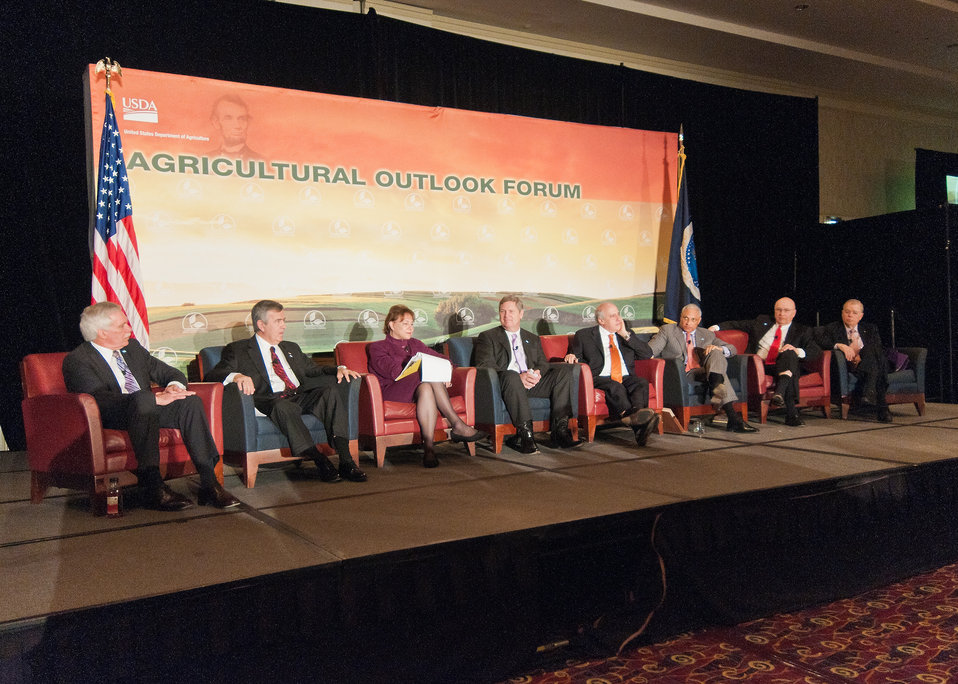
At the 2012 Agricultural Outlook Forum, “Moving Agriculture Forward” in Arlington, VA, held on Thursday, February 23, 2012, 7 former Secretaries of Agriculture sat on the plenary panel “Visions of the Future” hosted by current Agriculture Secretary Tom Vilsack (L to R Governor Ed Schafer (ND), Senator Mike Johanns (NE), Ann Veneman, Agriculture Secretary Tom Vilsack, Congressman Dan Glickman (KS), Congressman Mike Espy (MS), Clayton Yeutter, and John Block).